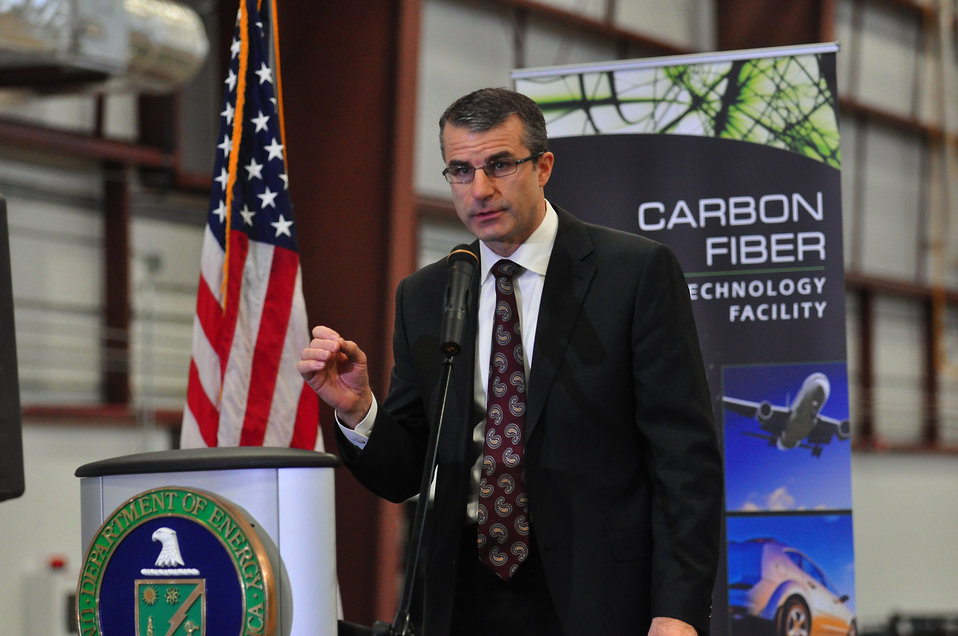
Carbon Fiber Technology Facilty Open House Oak Ridge Tennessee

13-025 DOE photo Lynn Freeny